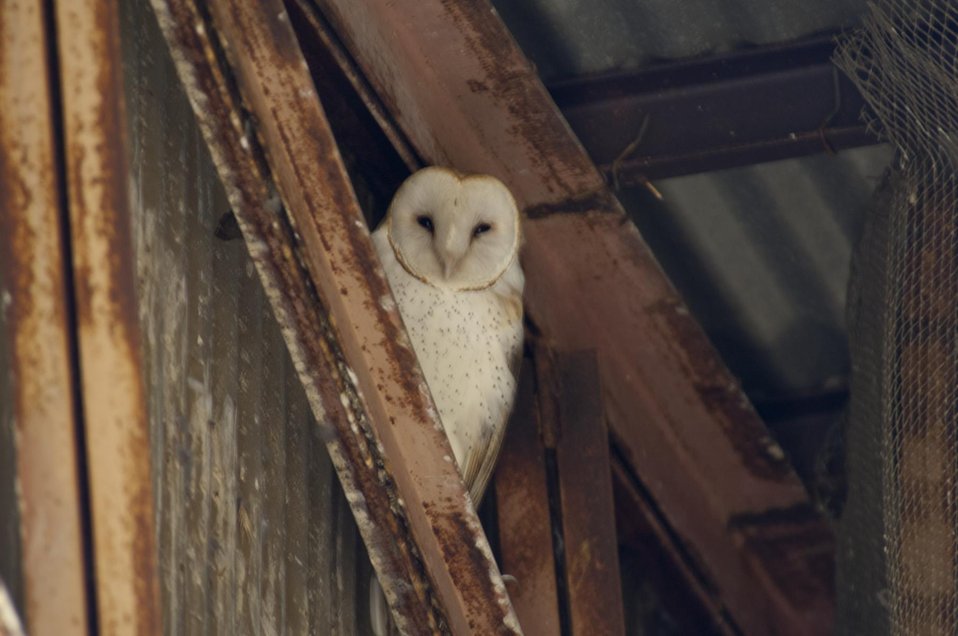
Barn Owl, Carrizo Plain 2